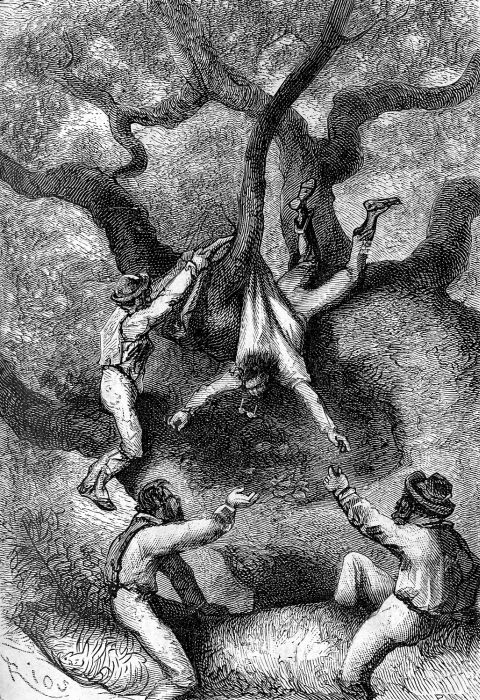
An ilustration from the novel 'In Search of the Castaways; or Captain Grant's Children' by Jules Verne drawn by Édouard Riou. Polski: Ilustracja powieści Juliusza Verne'a 'Dzieci kapitana Granta' autorstwa Édouarda Riou. Français : 'Les Enfants du capitaine Grant', Édouard Riou. Français : Paganel dégringolait de branche en branche.